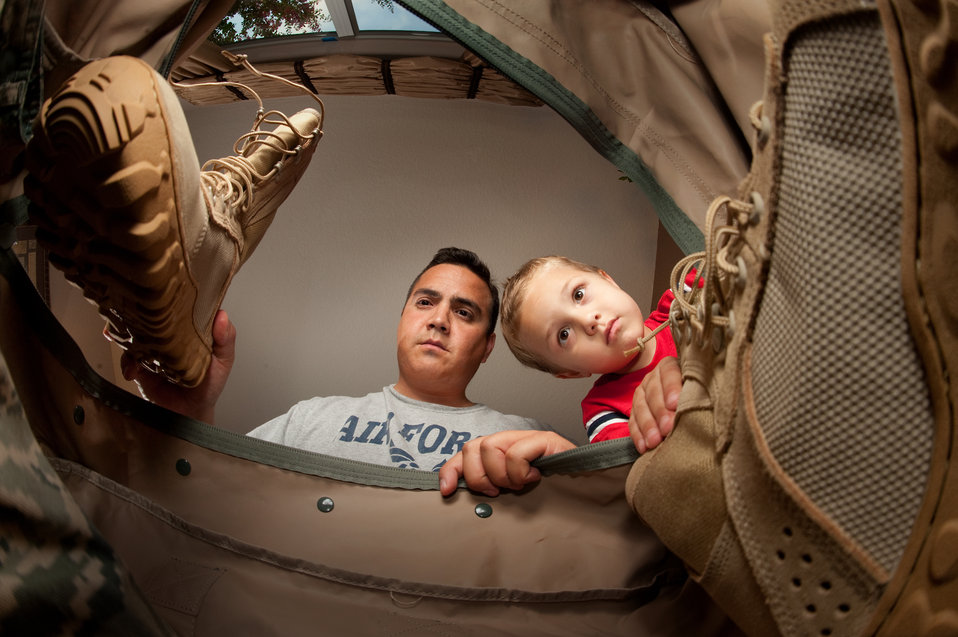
Blogging Couple Deployment preperation

Master Sgt. Rudy Gamez and his son, Tomas, 4 are in their home in San Antonio, Texas, on July 13, 2010. Helping his father pack helps him become a part of the deployment process and understand the time apart from his father. Later this year Sgt. Gamez and his wife Tech. Sgt. Christina Gamez will both be deployed and blog about their experiences.